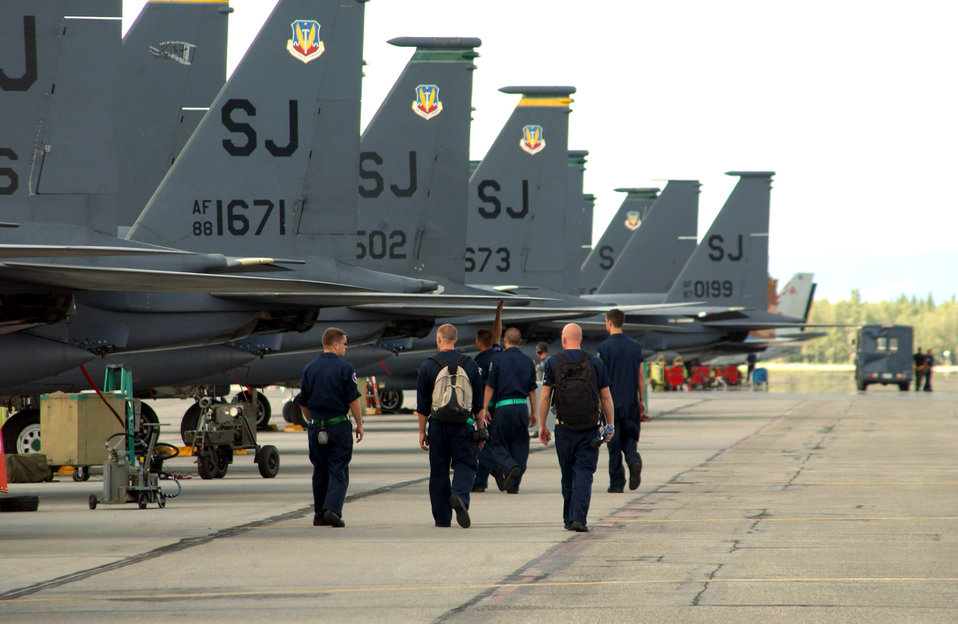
Eagles, Falcons wave a Red Flag

F-15E Strike Eagle maintainers deployed from the 4th Fighter Wing at Seymour Johnson Air Force Base, N.C., head out to their jets before a wave of takeoffs July 19 for Red Flag-Alaska at Eielson AFB, Alaska. Red Flag-Alaska's multinational participation and the addition of the Pacific Alaskan Range Complex assets provide realistic combat training in a safe and controlled setting.